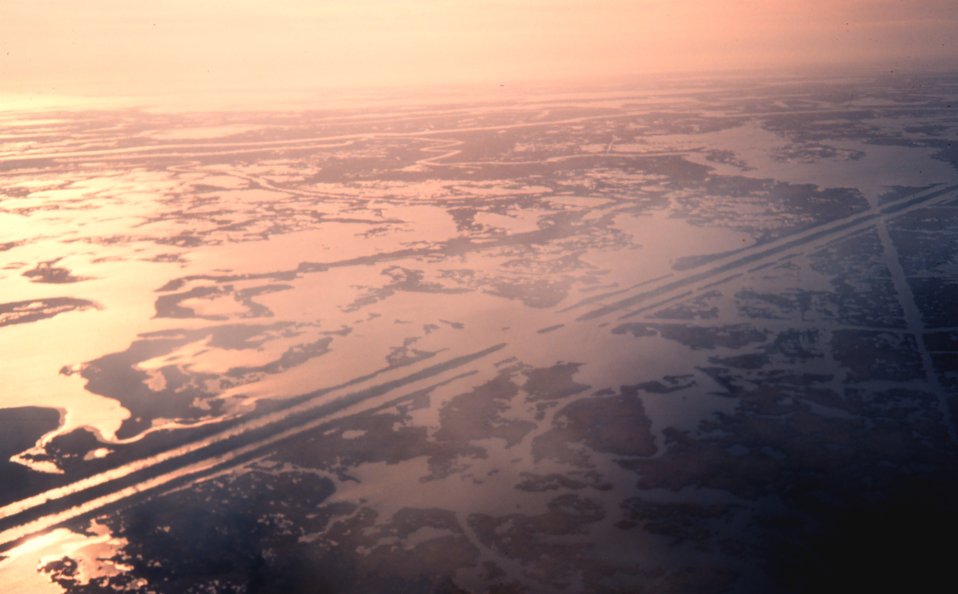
Viewing man-made canals in the marsh as seen on a foggy morning. Canals can disrupt water circulation in marsh systems.